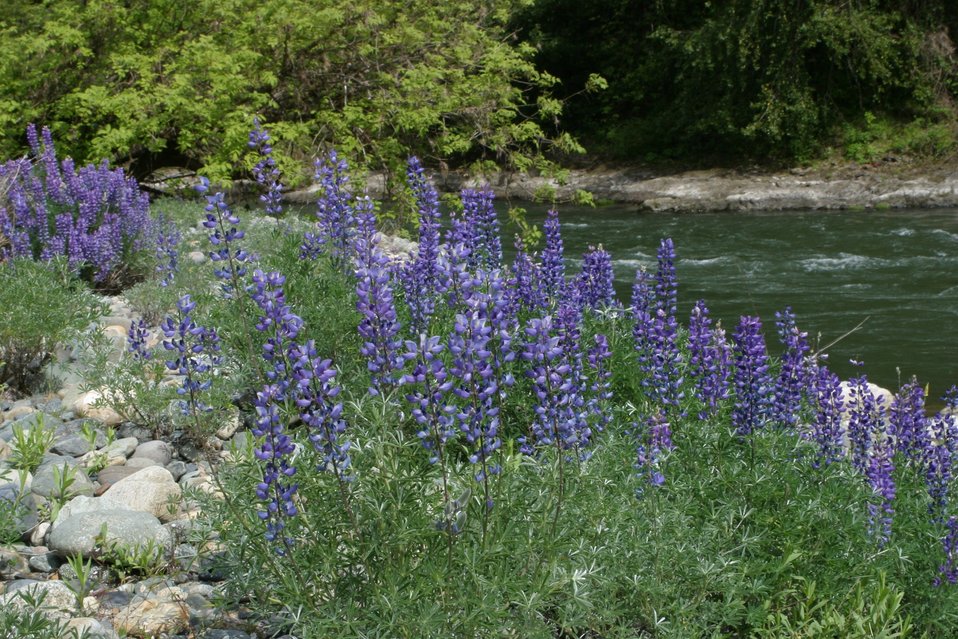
Wild section of the Rogue River from Grave Creek to Foster Bar. 3100 cfs at Grants Pass and 5300 at Agness.